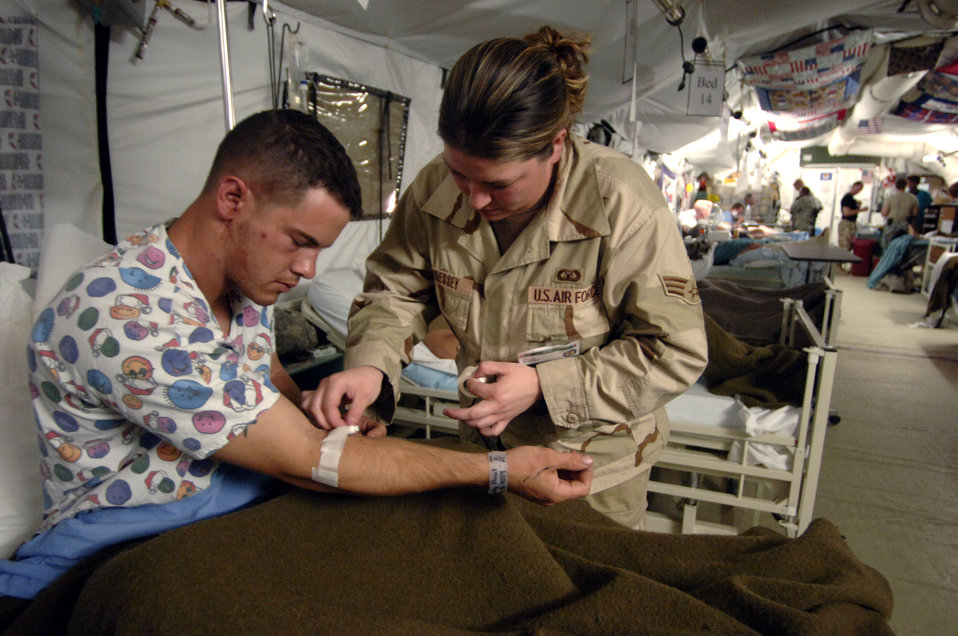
Tough duty brings out best in Balad hospital volunteers

During her day off from work, Senior Airman Jamie Hennessey applies tape to an IV drip line in the arm of Army Specialist Paul Smithy who was wounded in a blast near Balad, Iraq. When not in the tower as an air traffic controller, she works as a volunteer at the Air Force Theater Hospital at Balad Air Base, Iraq.